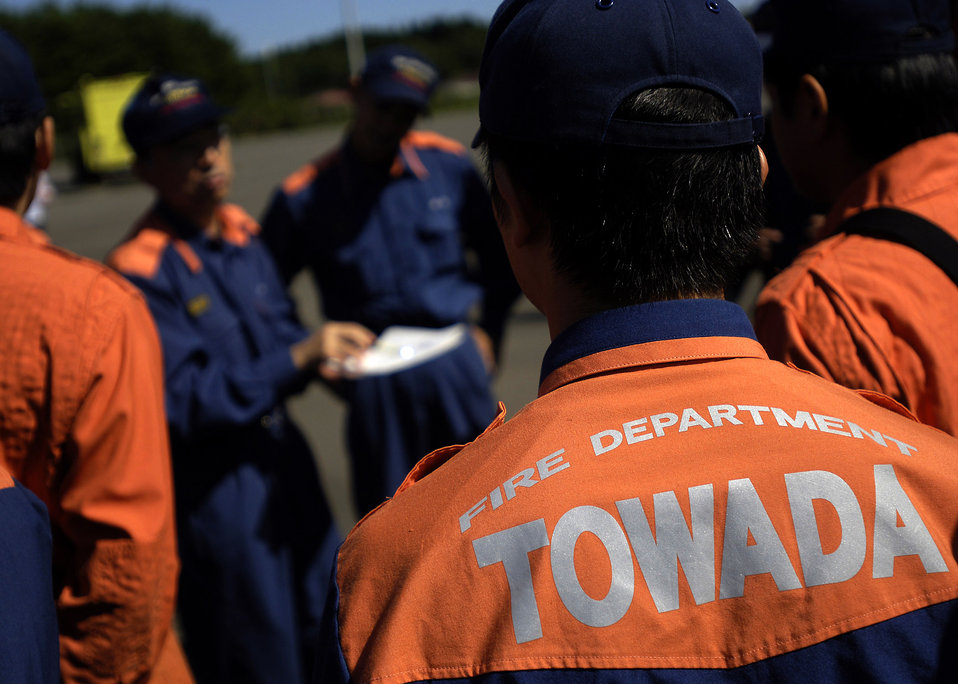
Fightin' fires

The Towada City fire chief gives his personnel a safety brief before entering the simulated downed aircraft at Misawa Air Base, Japan, Sept. 10. Approximately 30 Towada City firefighters underwent the training instructed by Misawa AB firefighters.